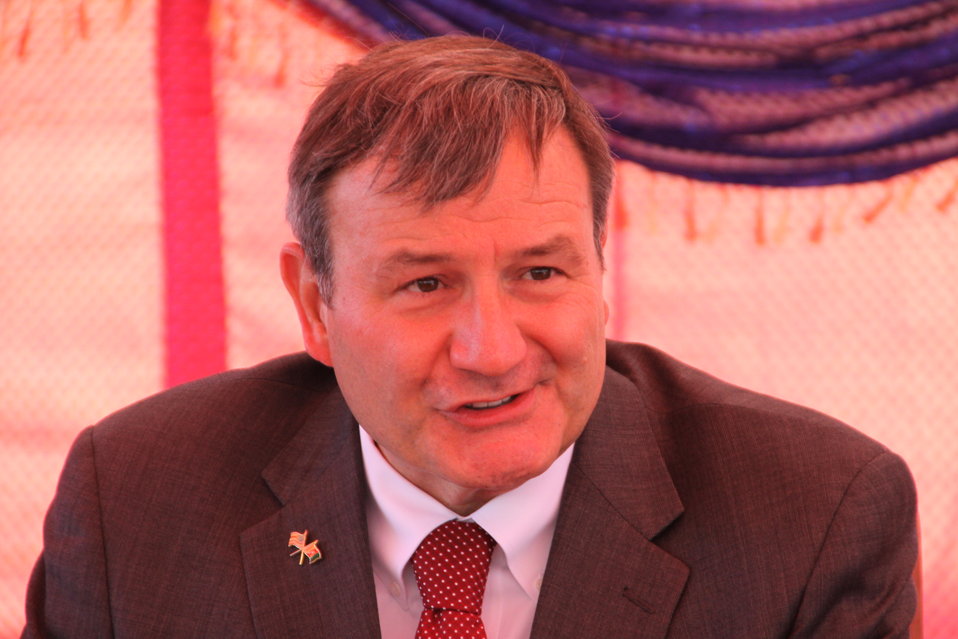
AVIPA Plus Wheat Seed Distribution 101005

US Ambassador Karl Eikenberry and USAID Acting Mission Director Kevin Brownawell joined the Minister of Agriculture, Irrigation and Livestock, H.E. Minister Mohammed Rahimi in signing a Memorandum of Understanding and distributing vouchers to area farmers for wheat and fertilizer.

US Ambassador Karl Eikenberry and USAID Acting Mission Director Kevin Brownawell joined the Minister of Agriculture, Irrigation and Livestock, H.E. Minister Mohammed Rahimi in signing a Memorandum of Understanding and distributing vouchers to area farmers for wheat and fertilizer.